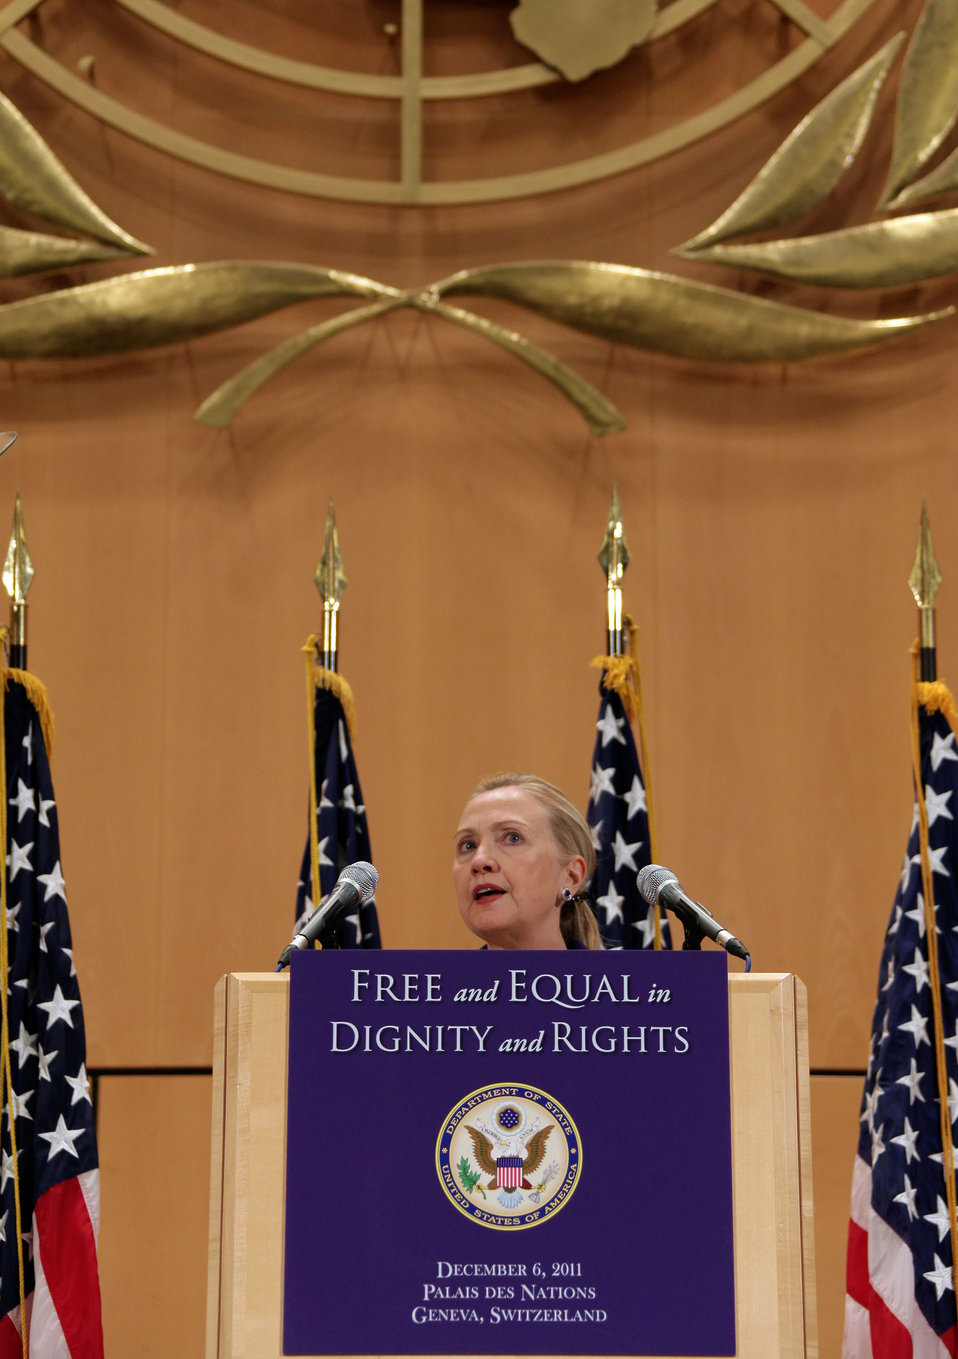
Secretary Clinton Delivers Remarks in Honor of International Human Rights Day

U.S. Secretary of State Hillary Rodham Clinton delivers remarks on 'Free and Equal in Dignity and Rights' in recognition of International Human Rights Day at the United Nations Office at Geneva in Switzerland on December 6, 2011.